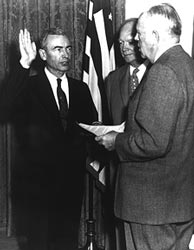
Donald A. Quarles

1950's -- Donald A. Quarles's tenure as the fourth secretary of the Air Force was marked by an increased emphasis on research and development. Quarles was the first Air Force secretary with a strong formal, scientific background and he devoted much of his attention to technological advances. He proved in his 20-month tenure that a scientist could lead and manage the Air Force competently. Like the first air secretary, Stuart Symington, Quarles was the right man at the right time.